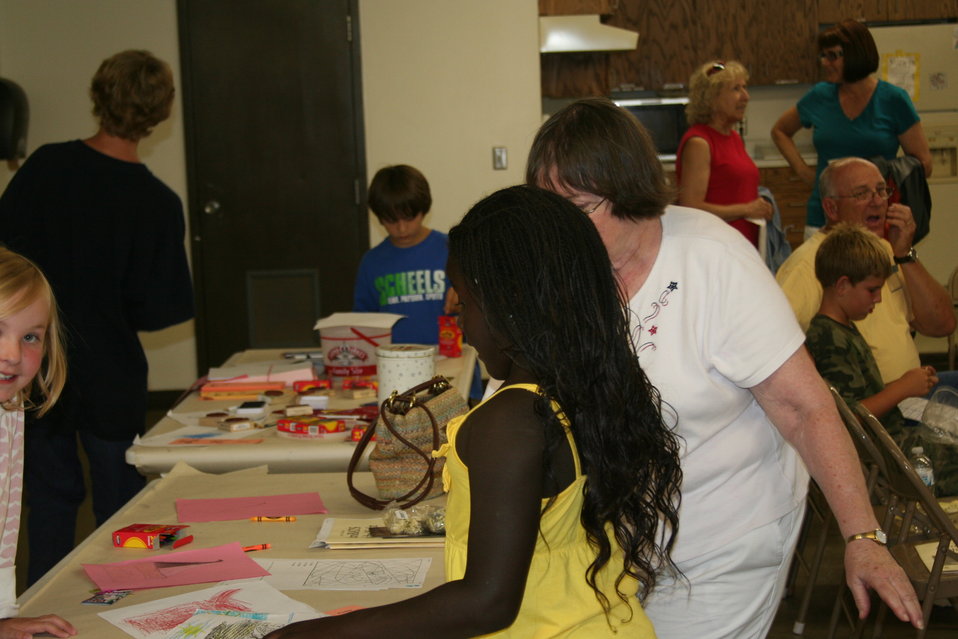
Creatures of the Night 2011

Lots of night creature activities such as coloring bats/bat crossword puzzles.